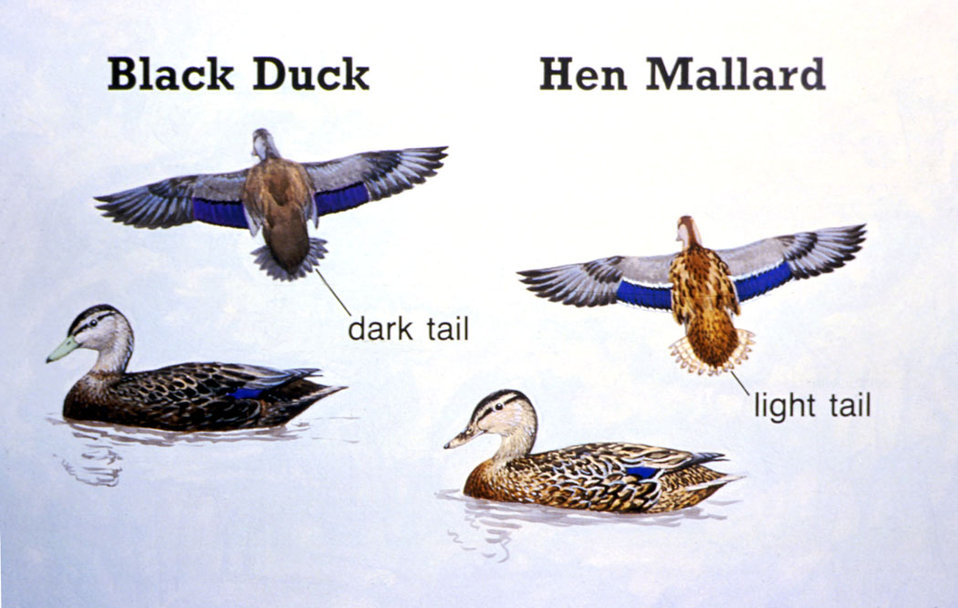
Black duck and hen mallard characteristics comparison diagram